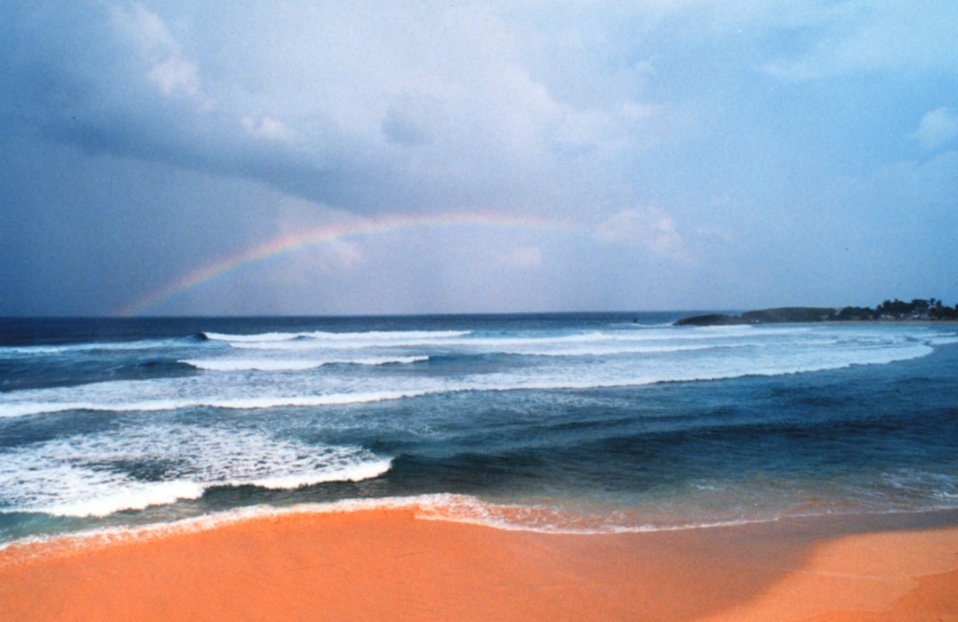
Playa Jobos Beach near Isabela.